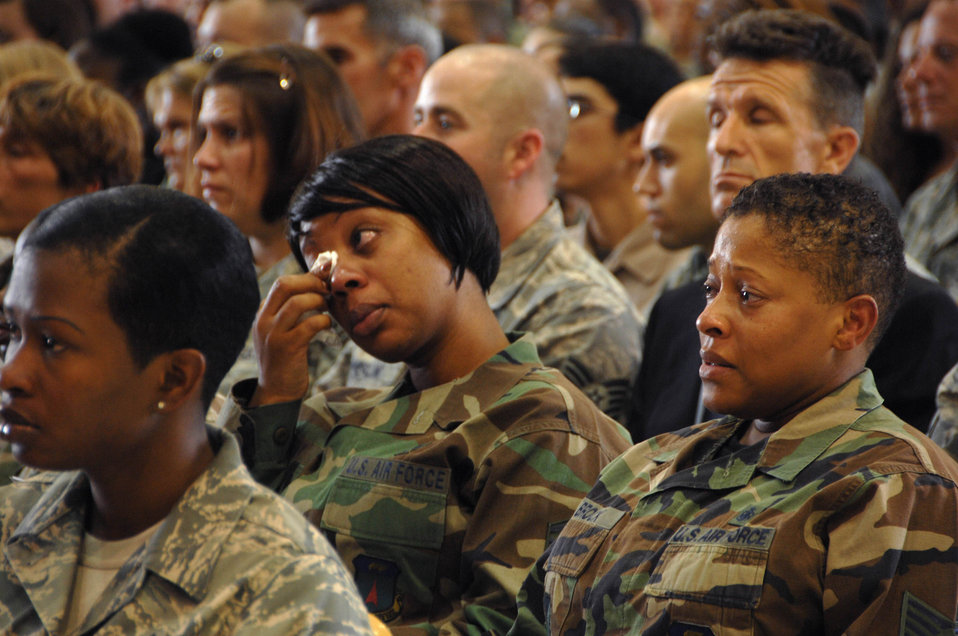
Raider 21 crew remembered

Andersen Airmen, deployed personnel, friends and family mourn the six Airmen who died July 21 when their B-52 Stratofortress crashed. The